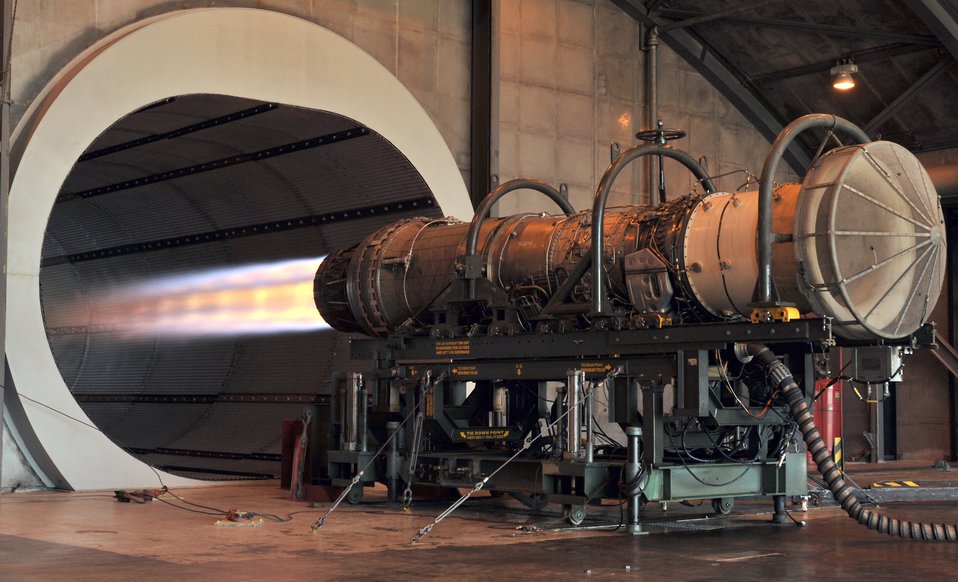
F-15 Eagle engine test run

An afterburner glows on an F-15 Eagle engine following a repair during an engine test run November 10, 2010, at the Florida Air National Guard base in Jacksonville International Airport, Fla.